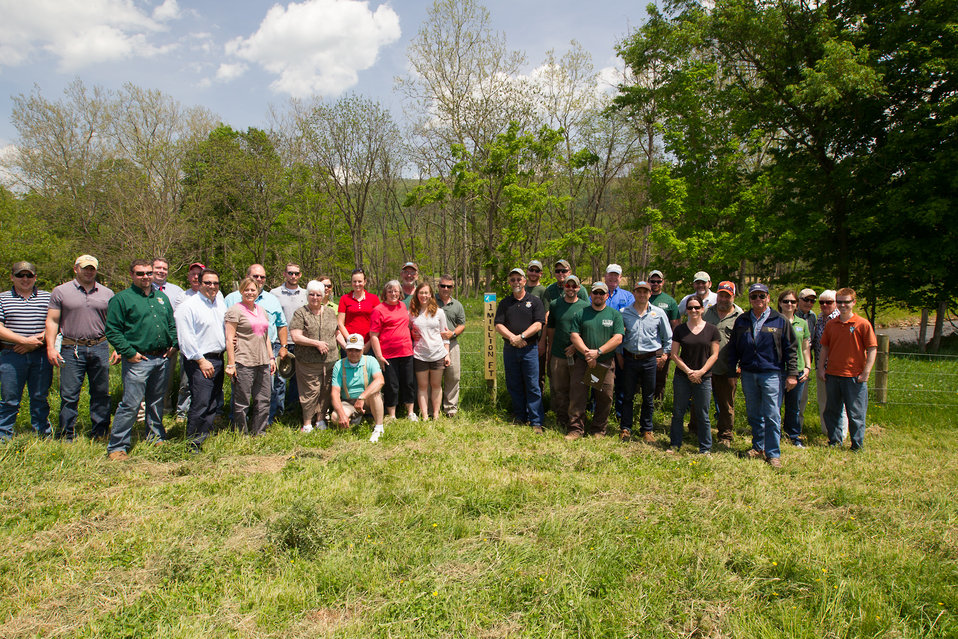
Celebrating 1 Million Feet of Conservation Fence in WV

Partners for Fish and Wildlife Program